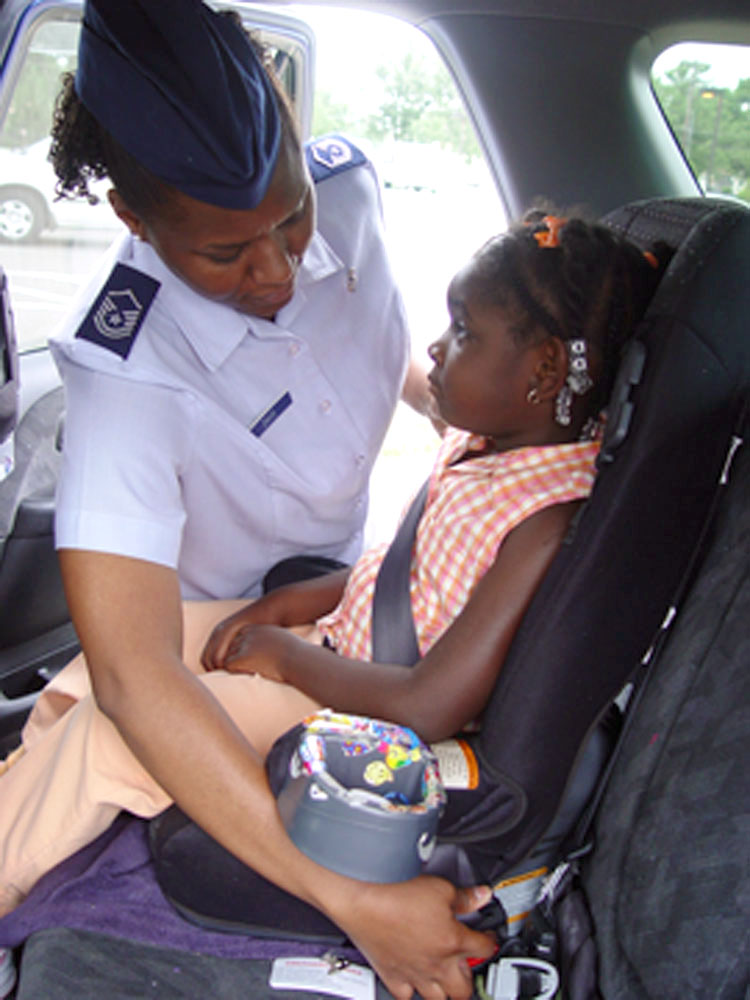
Child development center offers parents car seat guidance

MCCONNELL AIR FORCE BASE, Kan. -- Master Sgt. Kimberly Davis properly secures her 5-year-old daughter, TyDasia, into her high back belt-positioning booster seat. Sergeant Davis is trained and certified to check car seats. She is assigned to the 22nd Medical Support Squadron here.